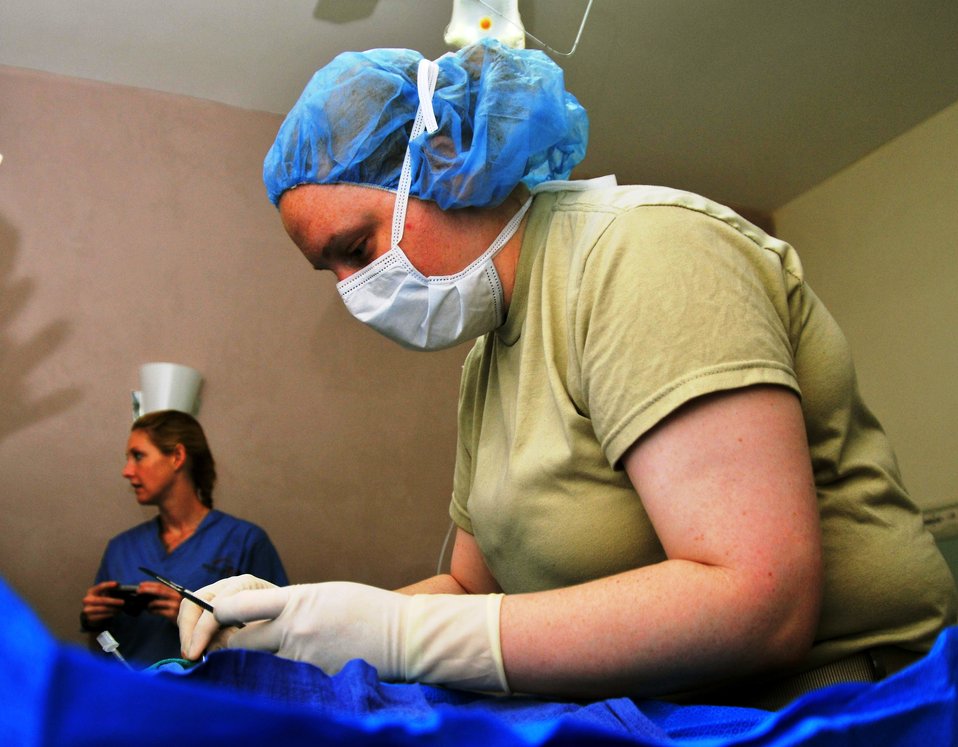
A Member of Veterinarian Army Capt. (Dr.) Eric Storey's Team Works on a Feline Veterinary Patient

A member of U.S. Army Capt. (Dr.) Eric Storey's team, a veterinarian from the 994th Medical Detachment, works on a feline veterinary patient during a veterinarian community service event in support of Pacific Partnership 2010 on June 25, 2010, in Sihanoukville, Cambodia. The Military Sealift Command hospital ship USNS Mercy (T-AH 19) is in Cambodia conducting the fifth in a series of annual U.S. Pacific Fleet humanitarian and civic assistance endeavors to strengthen regional partnerships.